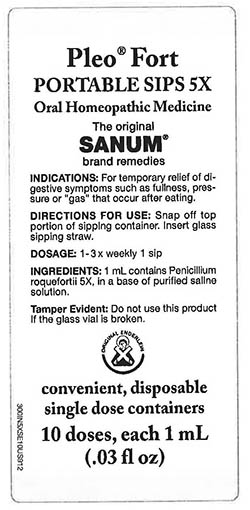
RECALLED – Homeopathic Drug Products

March 18, 2014 – Product Recall – Terra-Medica Issues Voluntary Nationwide Recall of Specified Lots of Pleo Homeopathic Drug Products Due to the Potential for Undeclared Penicillin.